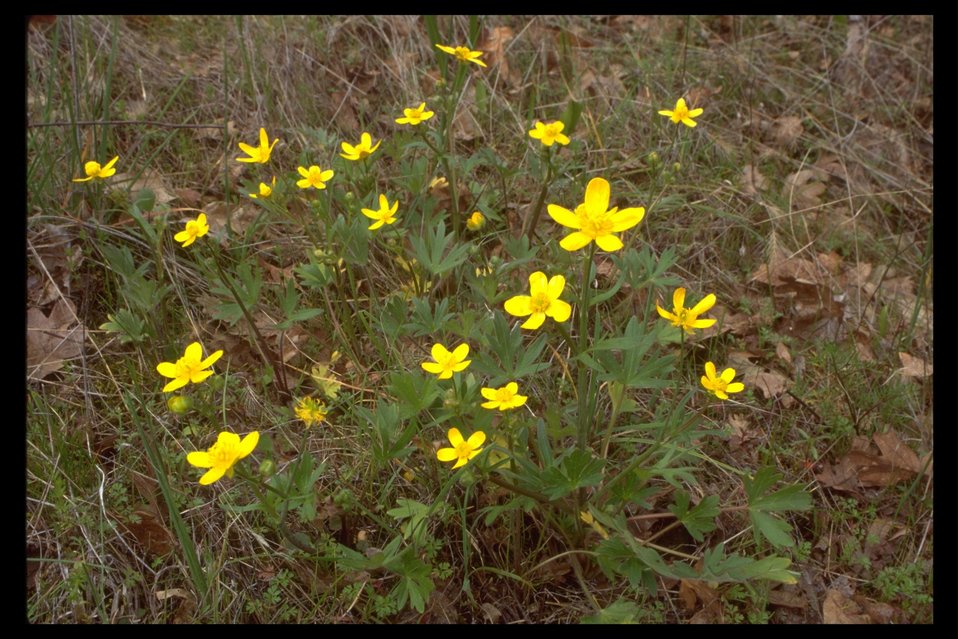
Western Buttercup (Ranunculus occidentalis) at Upper Table Rock (UTR).